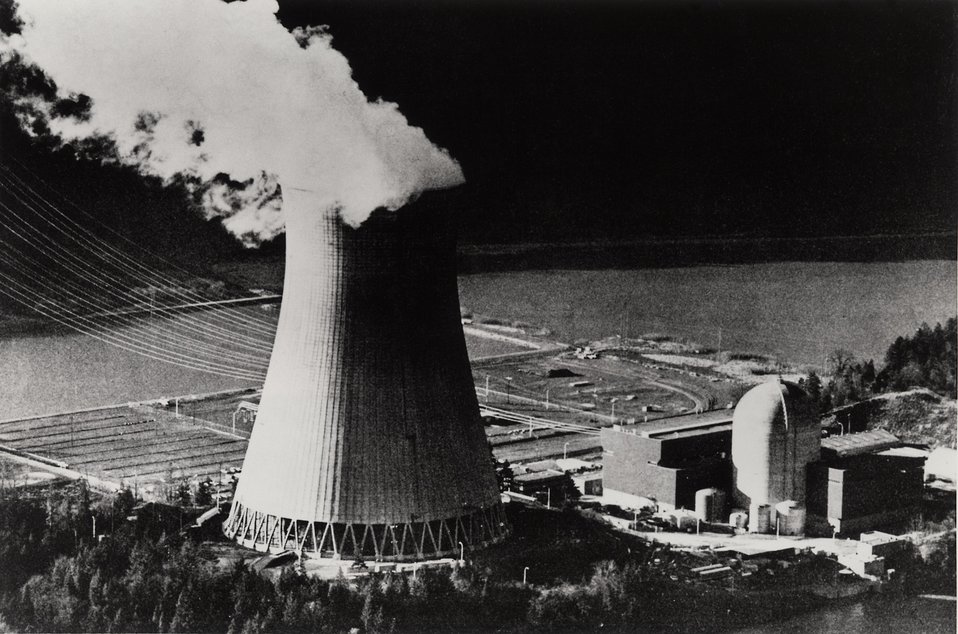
U.S. Nuclear installation with cooling tower on left, reactor building on right.